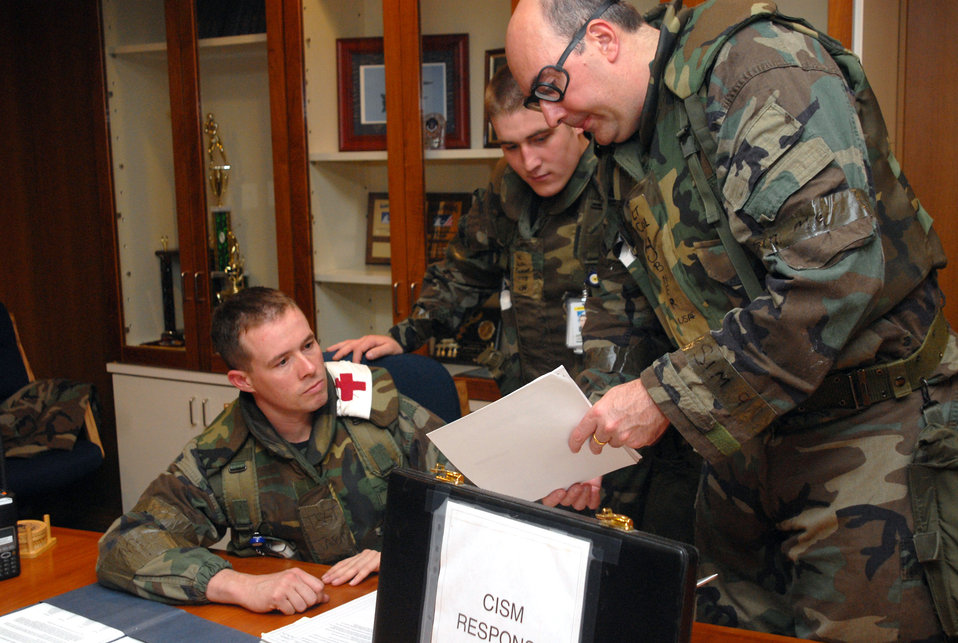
Operational readiness exercise tests Airmen, Marines

Tech. Sgt. Jason Sharp, Airman 1st Class Justin Beckett and Lt. Col. Mark Hubner review mental health procedures to use in response to scenarios during a joint operational readiness exercise Dec. 3 to 7 at Kadena Air Base, Japan. The scenarios enable base agencies to work together to mitigate real-world situations and heighten readiness capabilities. The Airmen are all members of the 18th Medical Operations Squadron.